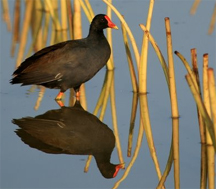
Moorhen - Huleia NWR

The Hawaiian Moorhen is known as the most secretive bird in the Hawaiian Islands, making it difficult to conduct surveys of this species.